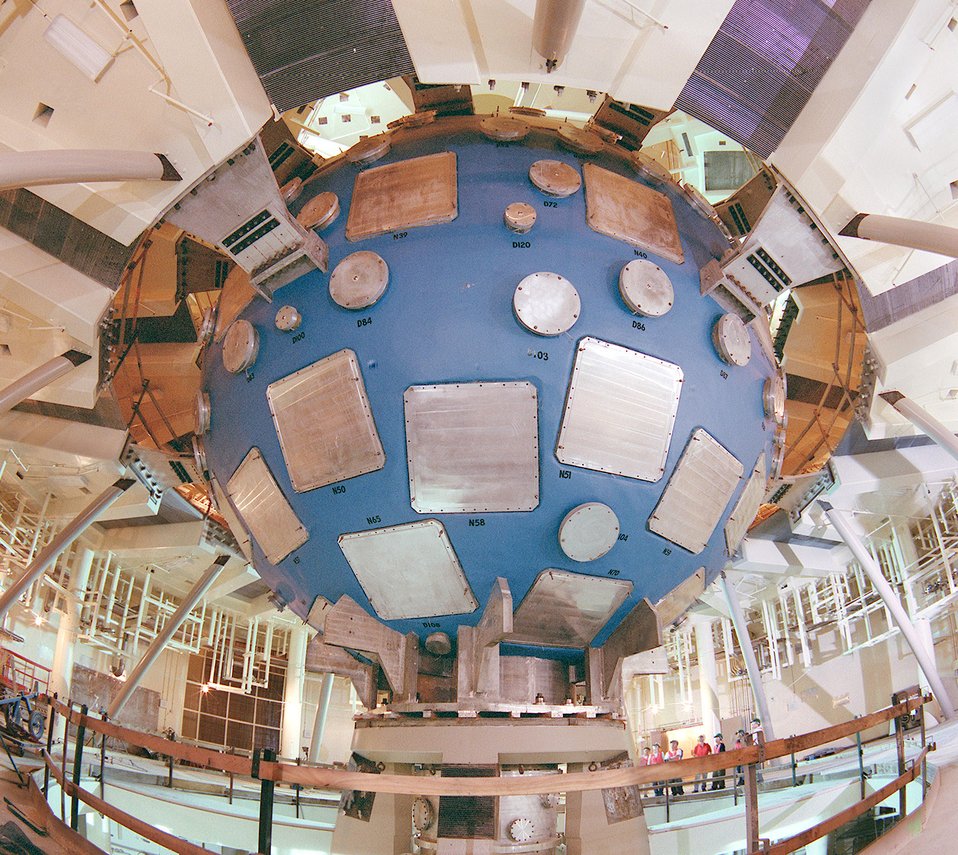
NIF'S 1,000,000-LB., 30-FT-DIAMETER, TARGET CHAMBER ALIGNED TO 1/4 MILLIMETER INSIDE THE TARGET BAY.

THE NATIONAL IGNITION FACILITY AT LLNL ENABLES KEY PROGRAMS AND TECHNOLOGIES THAT SUPPORT DOE'S NATIONAL NUCLEAR SECURITY ADMINISTRATION DEFENSE PROGRAMS AND LLNL MISSIONS, ENSURING THAT THE NATION'S NUCLEAR WEAPONS REMAIN SAFE, SECURE AND RELIABLE. NIF, ONE OF THE CORNERSTONES OF DOE'S STOCKPILE STEWARDSHIP PROGRAM, WILL INTEGRATE THE INERTIAL CONFINEMENT FUSION PROGRAM INTO THE OVERALL STOCKPILE STEWARDSHIP PROGRAM AND FOSTER THE DEVELOPMENT OF ASSOCIATED LASER TECHNOLOGIES.